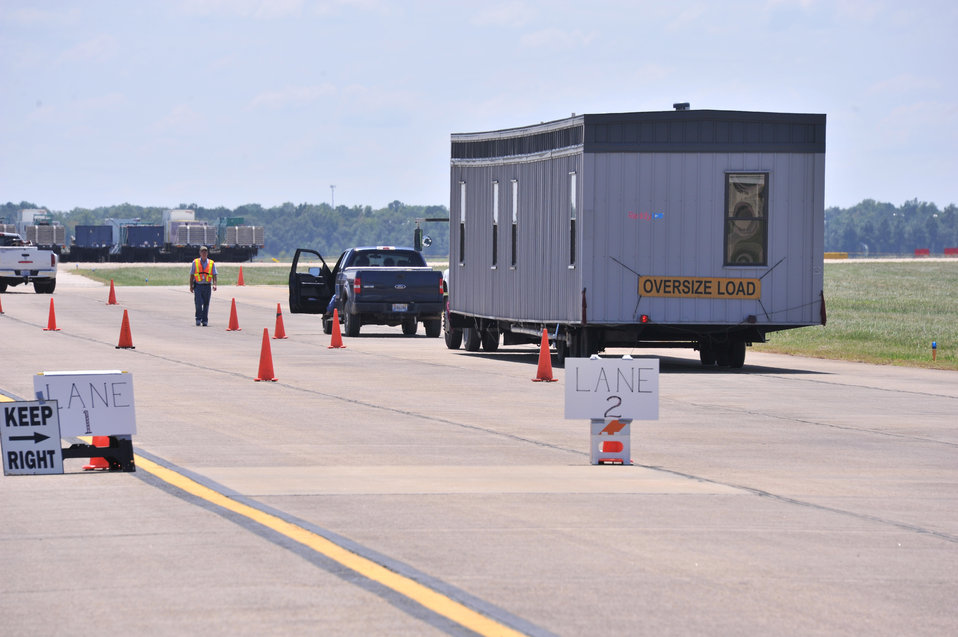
Maxwell, FEMA prepare relief supplies for Tropical Storm Isaac

Maxwell Air Force Base hosts Federal Emergency Management Agency trucks waiting to assist areas in the southeast effected by Tropical Storm Isaac, Aug. 27. FEMA trucks hold supplies to include water, cots, food and medical supplies.